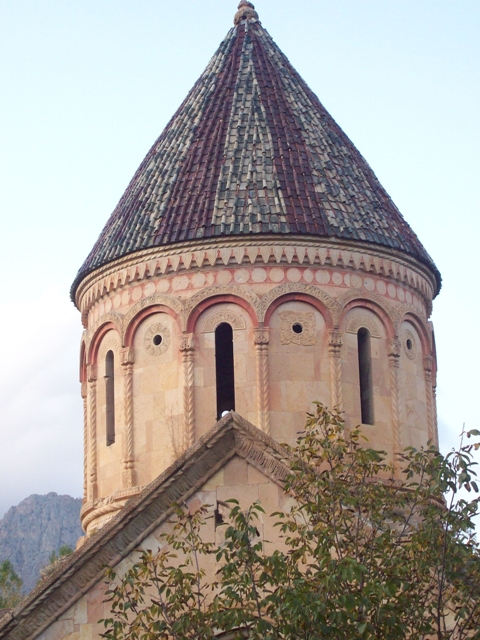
ქართული: იშხანი. გუმბათის ყელი. (სერაფიტას პირადი არქივიდან. გადაღებულია 2008 წლის ოქტომბრის თვეში)